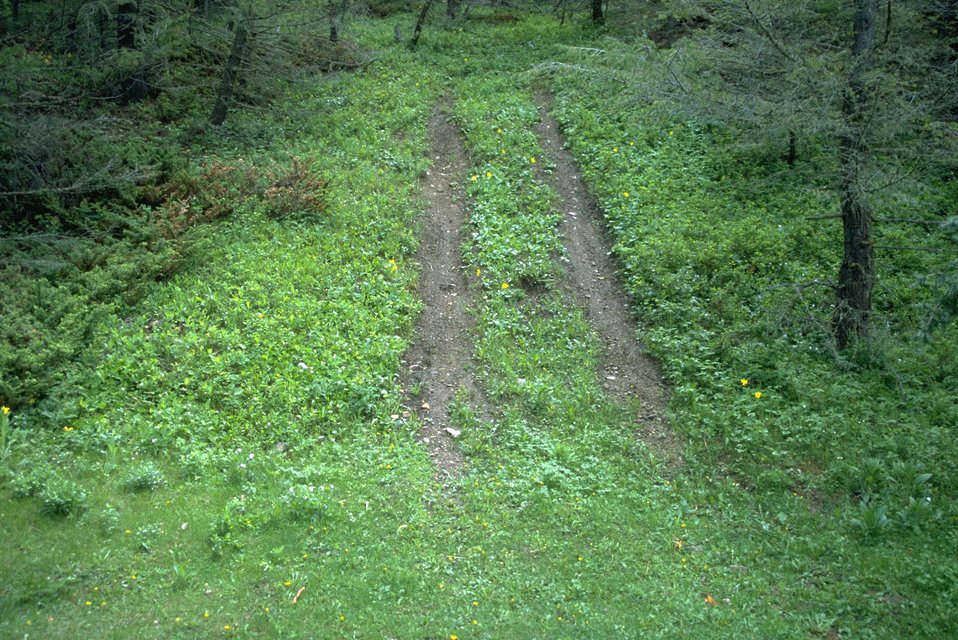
Damage to riparian by an off-highway vehicle